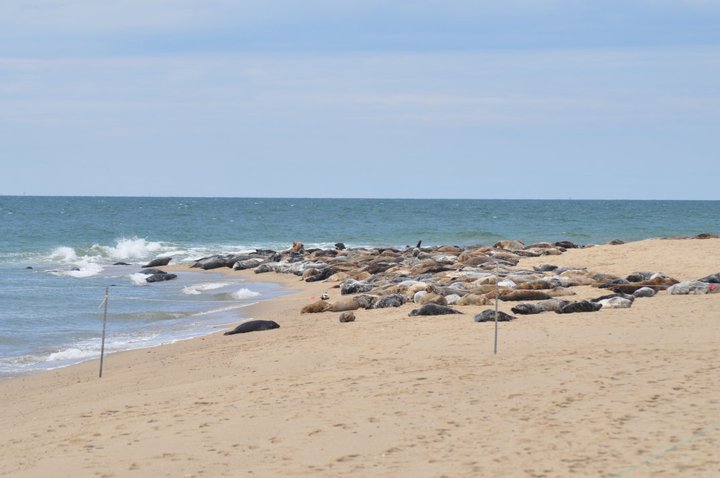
Seals at Nantucket National Wildlife Refuge in Massachusetts.